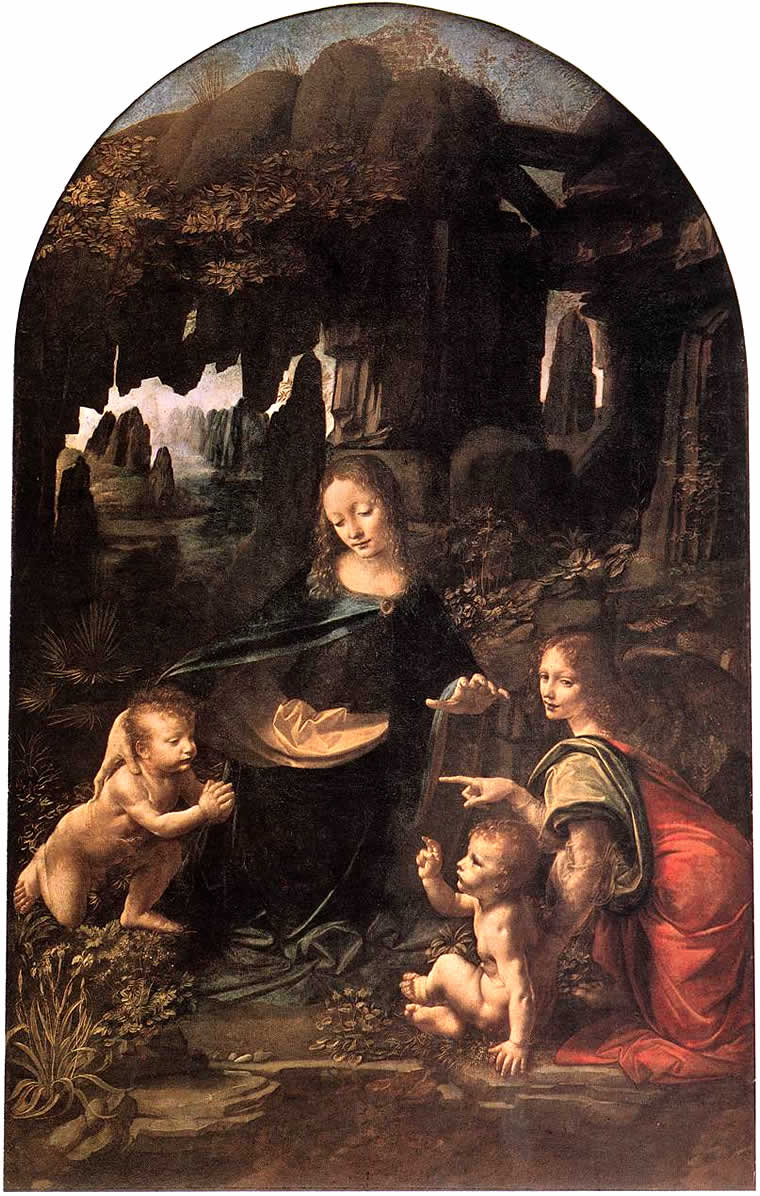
'Madonna of the Rocks' by Leonardo da Vinci, Louvre version